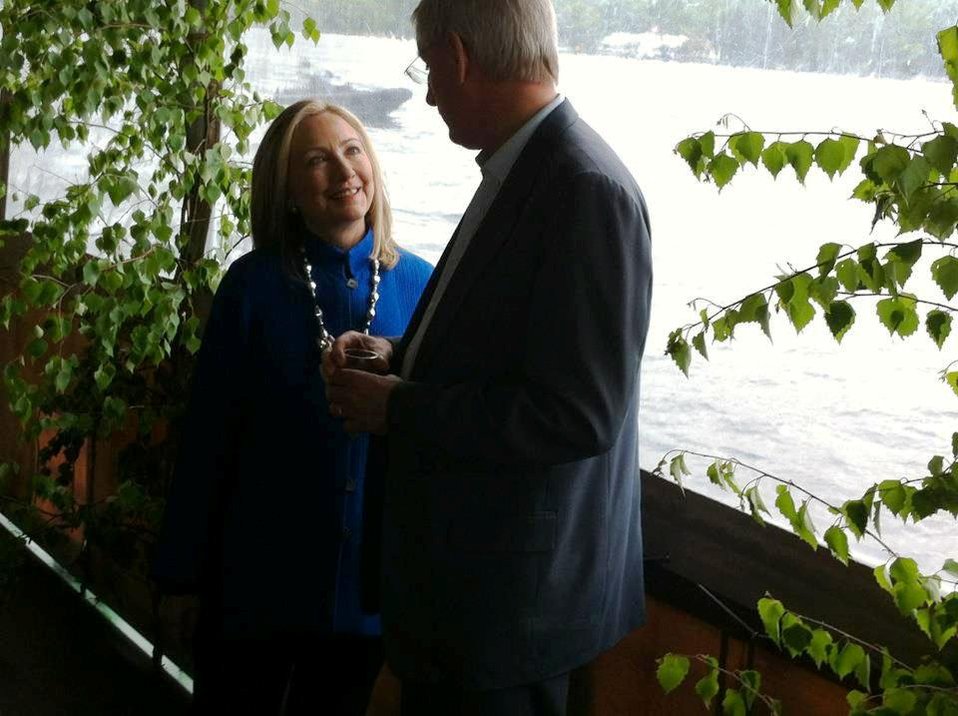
Secretary Clinton Speaks With Swedish Foreign Minister Bildt

U.S. Secretary of State Hillary Rodham Clinton speaks with Swedish Foreign Minister Carl Bildt in Stockholm, Sweden, on June 3, 2012.